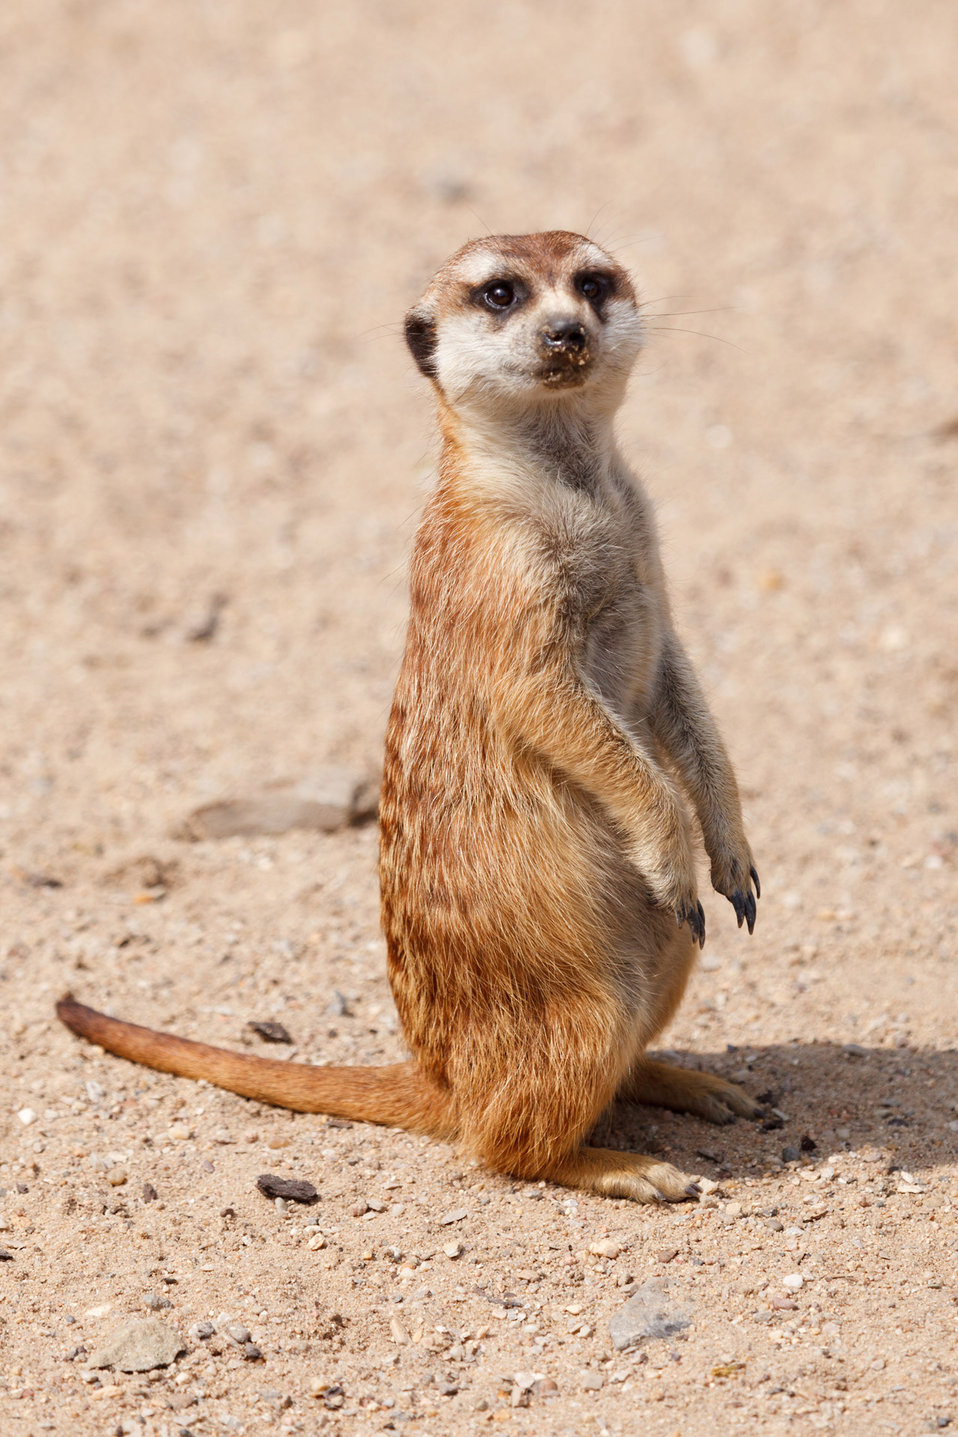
Meerkat on watch

Cute meerkat on a lookout.